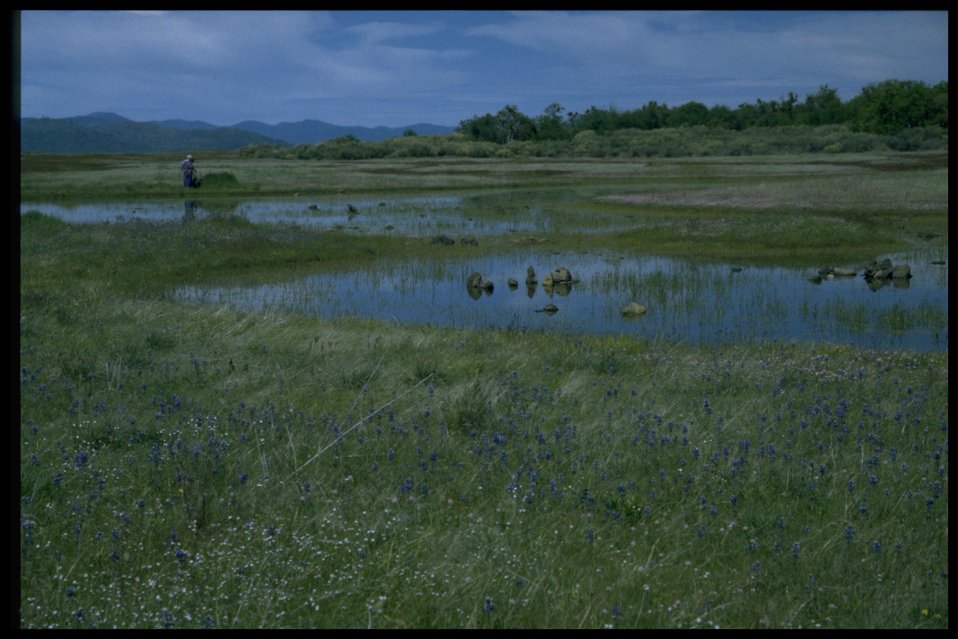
Scenic view of vernal pool, Lupinus bicolor, Plectris congesta.